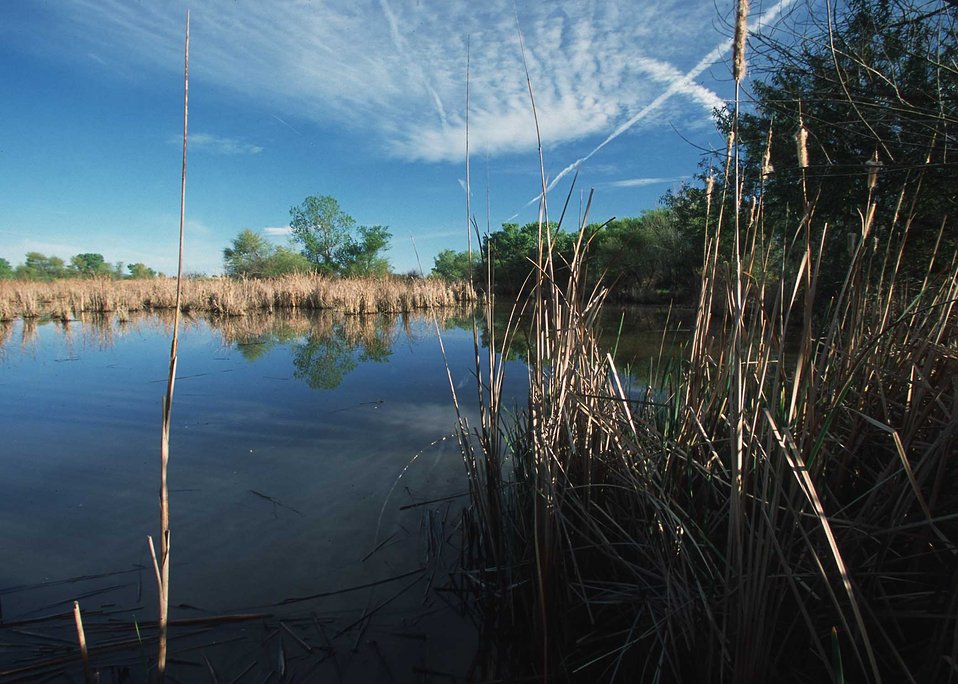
Restored wetland in northern California.